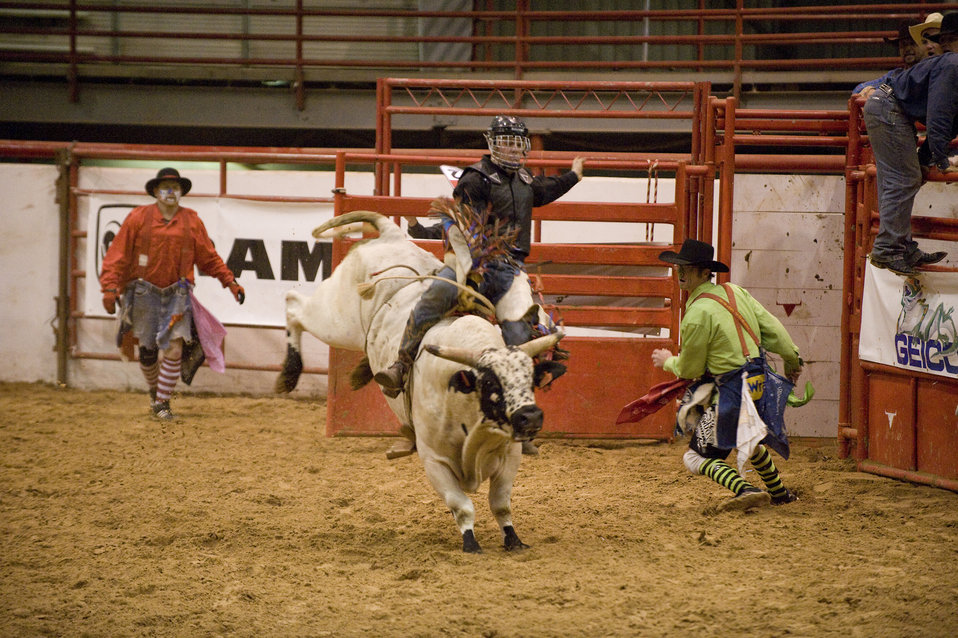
Airmen rope competition at rodeo world finals

Staff Sgt. Korey Stusse attempts to hang on for 8 seconds during the bull riding competition at the Professional Armed Forces Rodeo Associations World Finals Nov. 20, 2010, in Glen Rose, Texas. PAFRA is a professional rodeo organization founded and comprised of military members, retirees, dependents, veterans and civilian Department of Defense card holders. Sergeant Stusse is assigned to Spangdahlem Air Base, Germany.